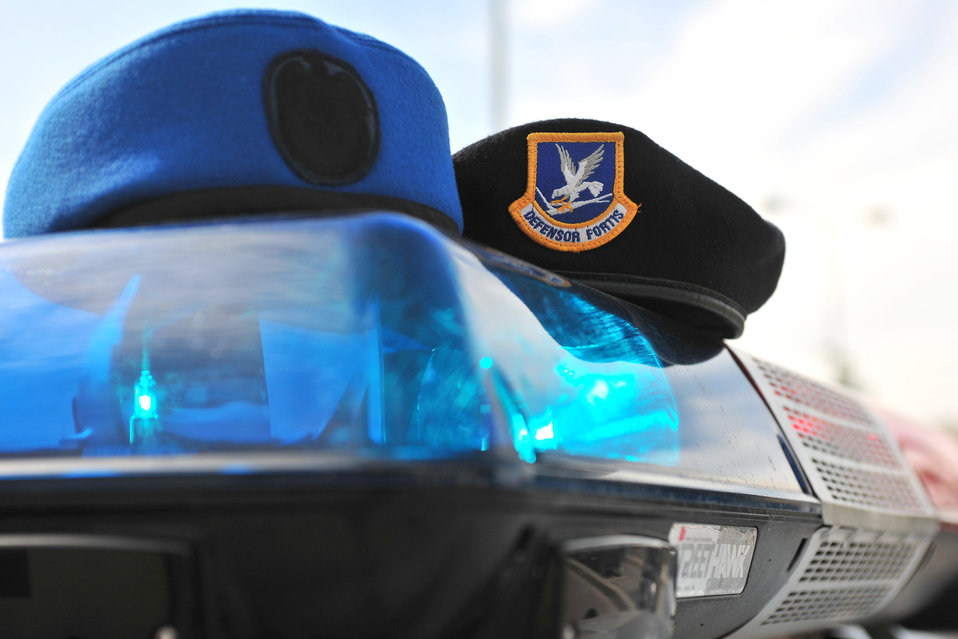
Turkish, American partnership keeps Incirlik AB safe

During joint patrol, Turkish and American security forces patrolman are in charge of performing random security checks on assigned buildings, responding to emergency calls and safeguarding the base.